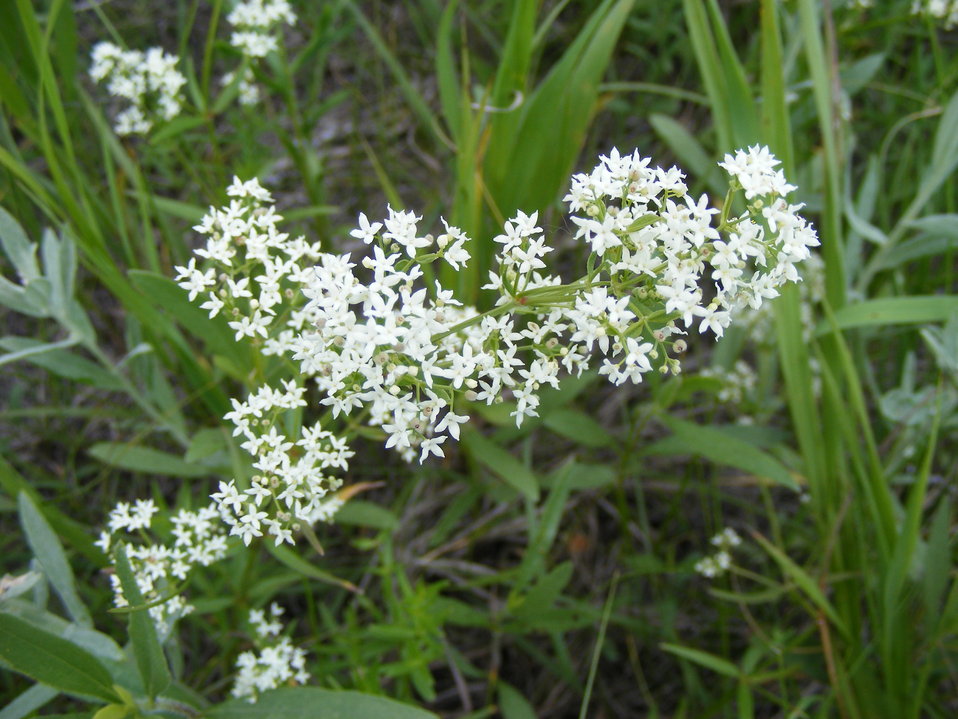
Northern Bedstraw

A mostly inconspicuous plant unless it is blooming, bedstraw is quite common in the prairie understory. These plants were once used to fill mattresses, hence the common name.

Credit: laura Hubers/USFWS